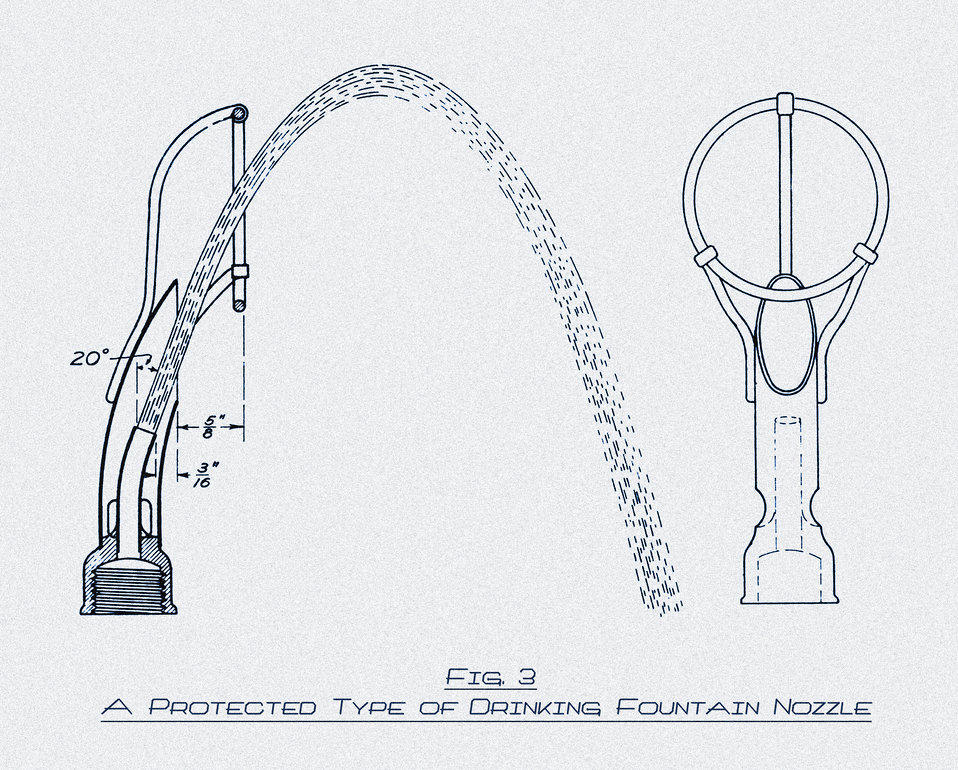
This historic 1917 drawing showed an improved design for a 'protected' type of drinking fountain nozzle. The Minnesota Department of Health examined one of the state's university's on-campus drinking fountains, and determined that their designs increased chances for bacterial contamination. Diagrammatic examples of unsatisfactory drinking fountain nozzle designs can be seen in PHIL #8514.